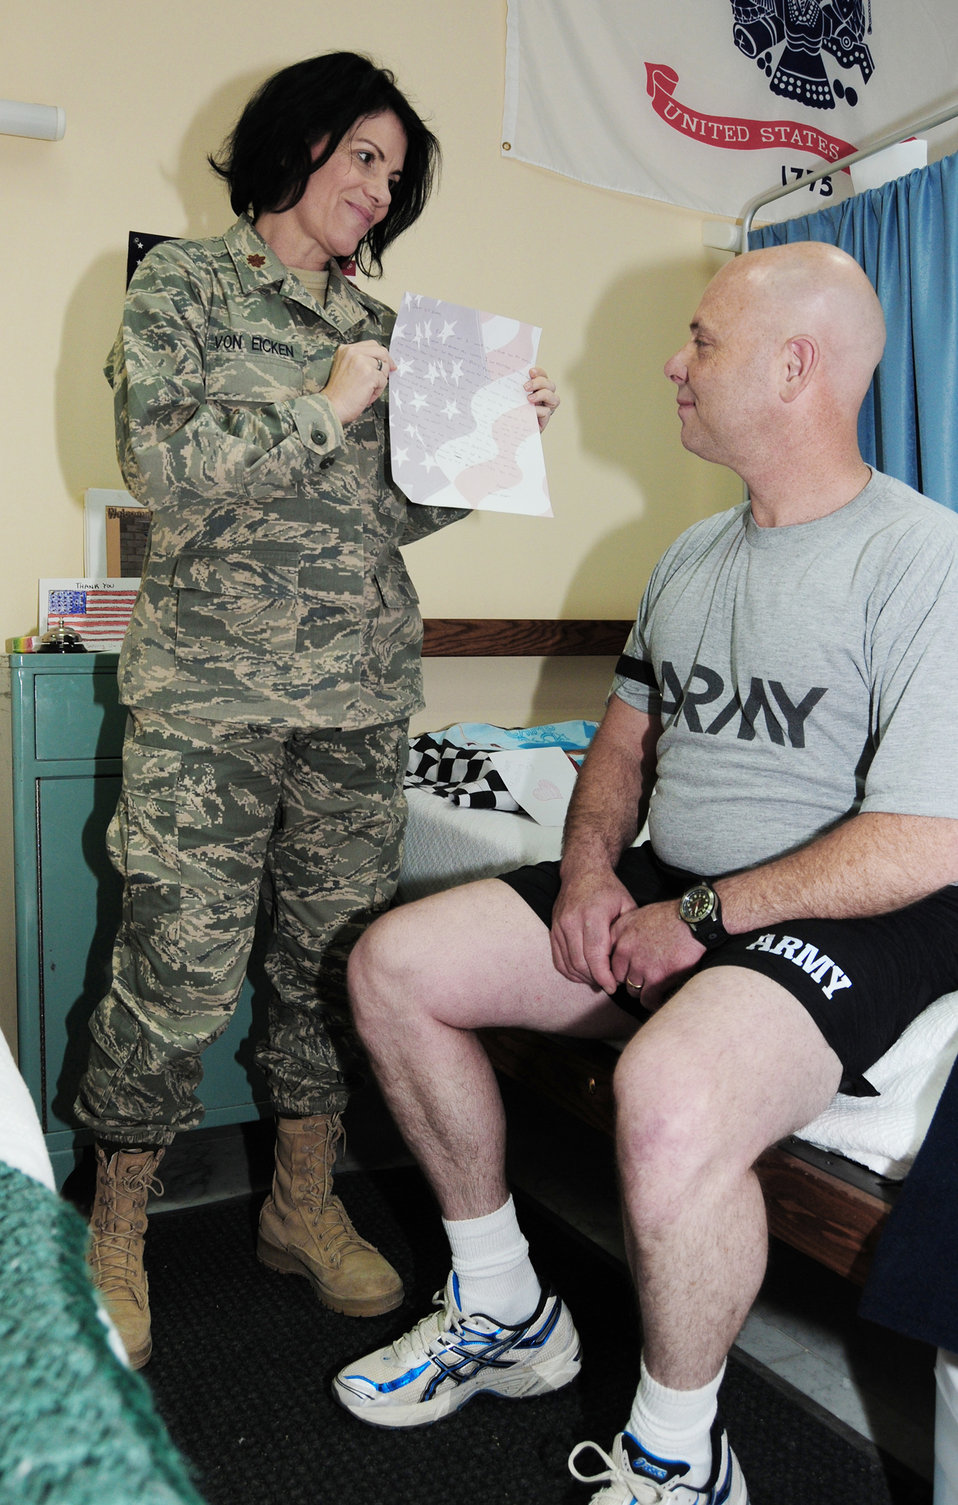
Medics earn Air Force-level recognition

Maj. Susan von Eicken talks to a patient escort about the letters of support provided to each transient patient Feb. 15, 2010, at an air base in Southwest Asia. Major von Eicken, deployed from Travis Air Force Base, Calif., was named the Air Force Mental Health Nurse of the Year. She is a contingency aeromedical staging facility mental health nurse with the 386th Expeditionary Medical Group.